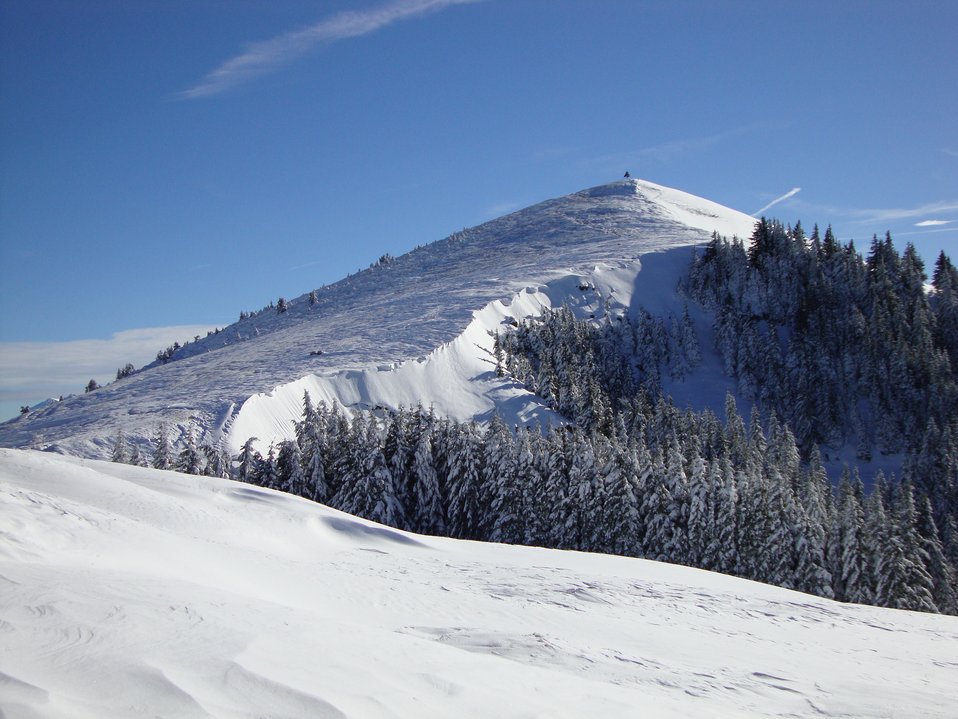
Deutsch: La Berra